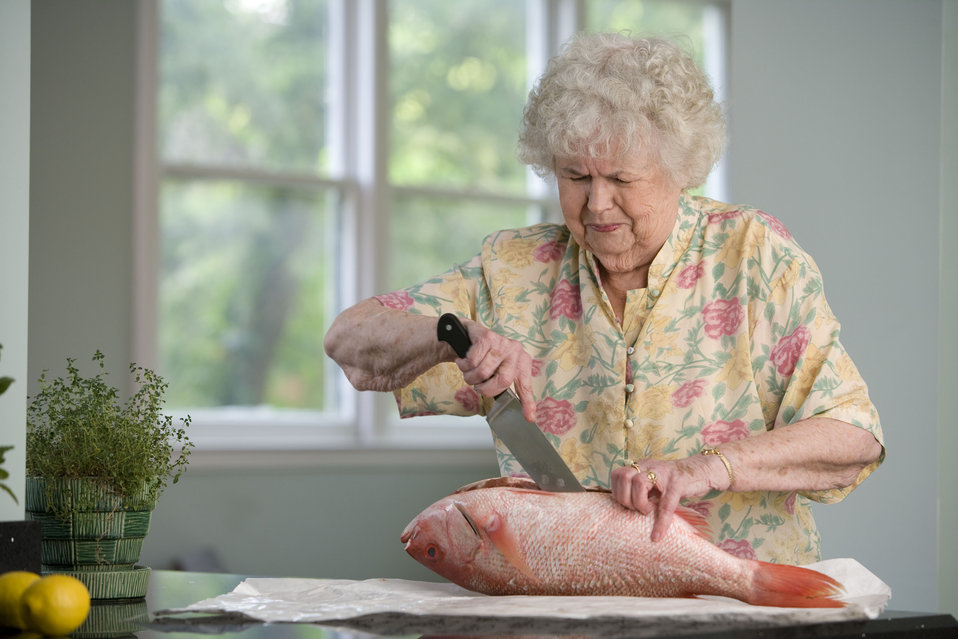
Here, an elderly woman was in the process of preparing a fresh fish on her clean kitchen counter. Carefully using a large knife, the woman had cut into the fish's belly, and would subsequently extract the internal organs prior to finally cutting away the fillets.